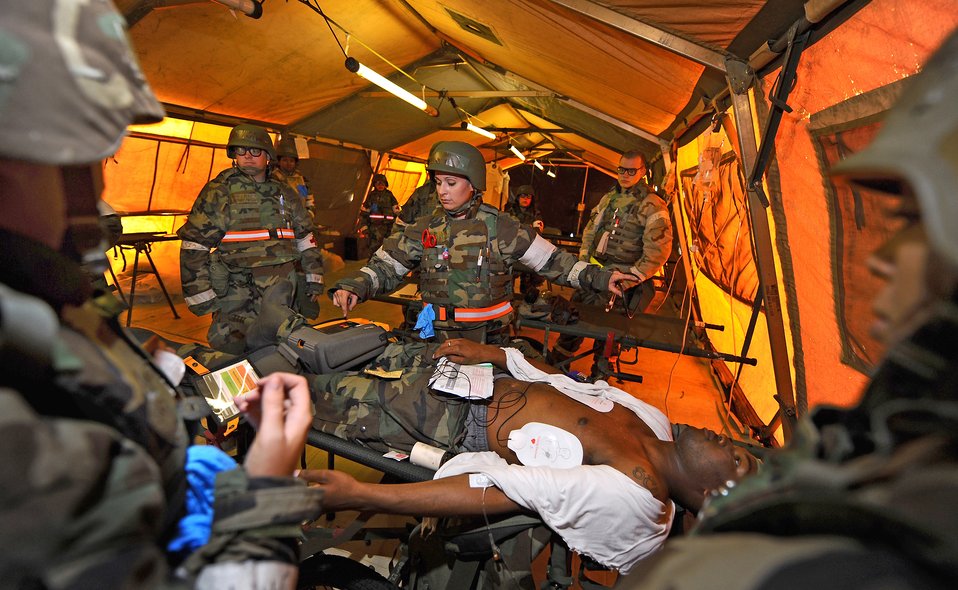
Keep clear

Staff Sgt. Rebekah Boe treats a